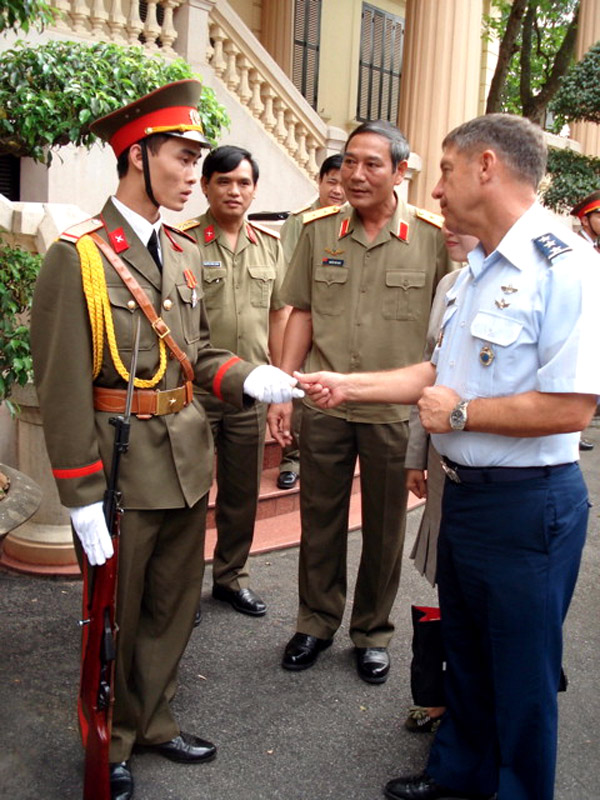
Vietnam visit strengthens military ties

Lt. Gen. Dan Leaf presents a coin to a Vietnamese soldier. General Leaf was in Vietnam recently to identify possible future military engagement activities. He is U.S. Pacific Command deputy commander.